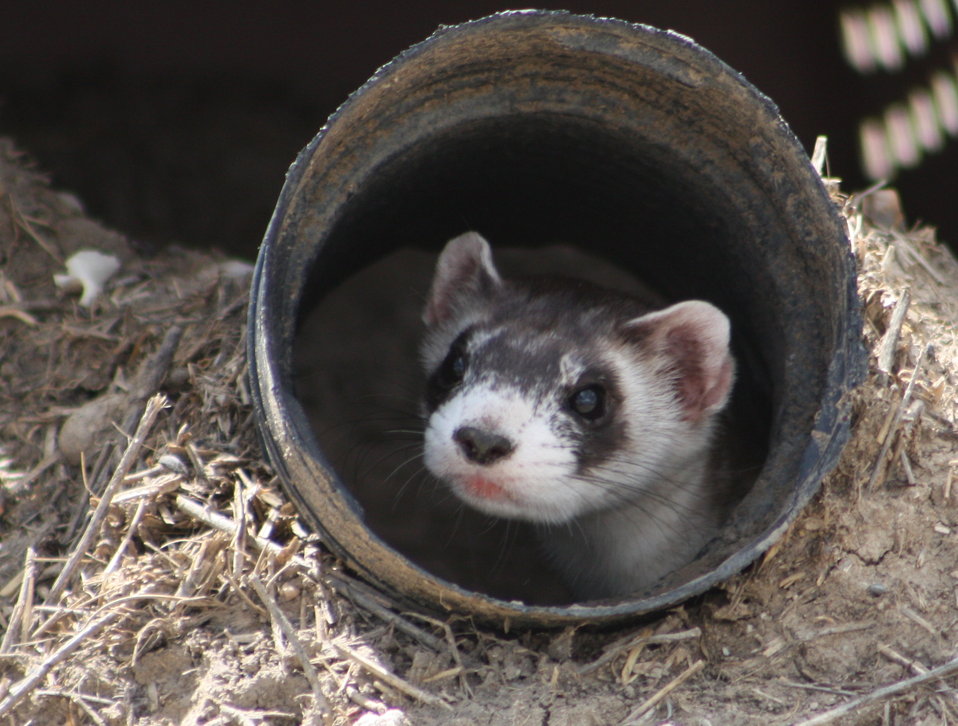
Interns visit the NBFFCC

In the summer of 2012, USFWS Region 6 interns visited the National Black-footed Ferret Conservation Center (NBFFCC) in Colorado to learn how the program reintroduces the endangered Black-footed ferret back into its native habitat.